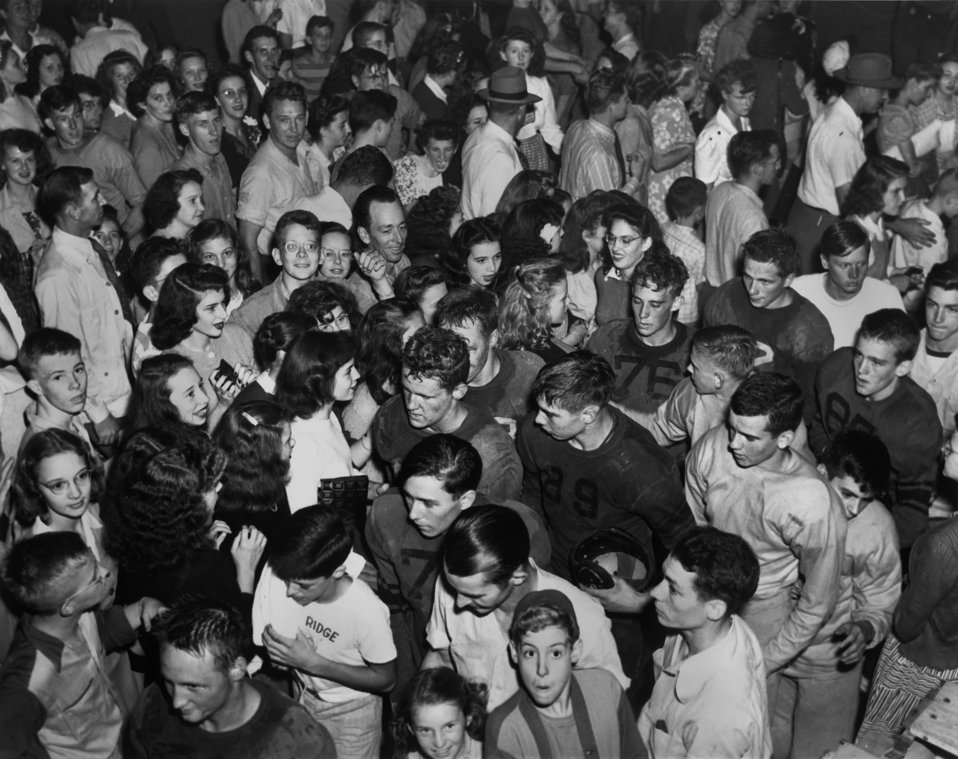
Football Oak Ridge - Spring City Oak Ridge

1135-20 DOE photo by Ed Westcott

Football Oak Ridge - Spring City Oak Ridge Tennessee 9/21/45